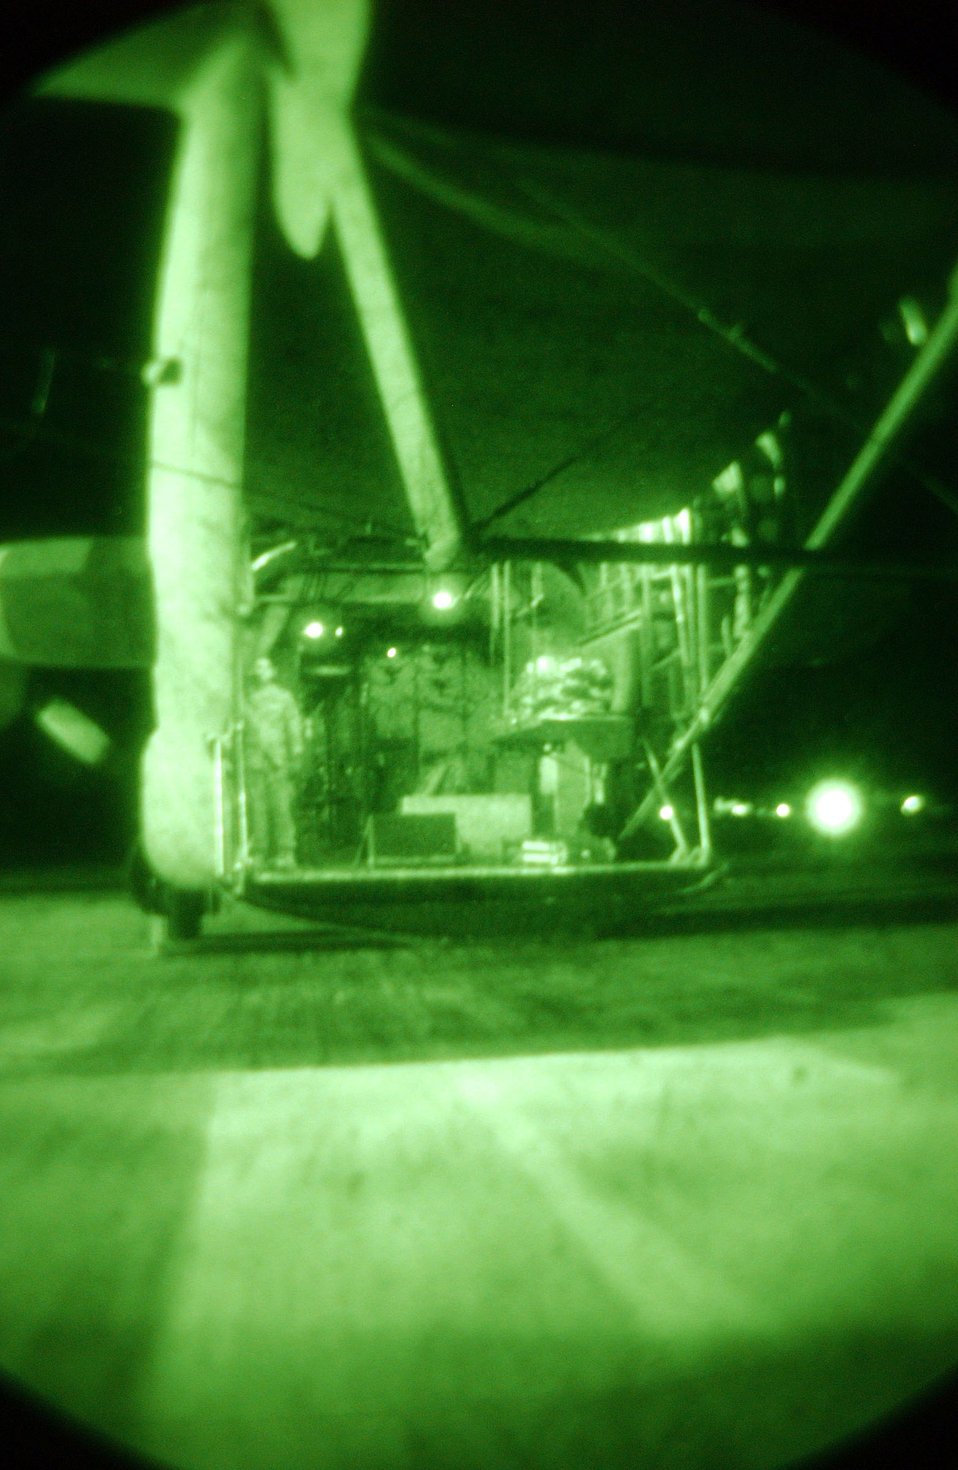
Silent protectors support Operation Enduring Freedom

BAGRAM AIR BASE, Afghanistan -- Staff Sgt. Brien Stanford opens the back ramp to an EC-130H Compass Call to allow life support to load mission essential equipment. Sergeant Stanford is a crew chief with the 41st Expeditionary Electronic Combat Squadron and is deployed from Davis-Monthan Air Force Base, Ariz.